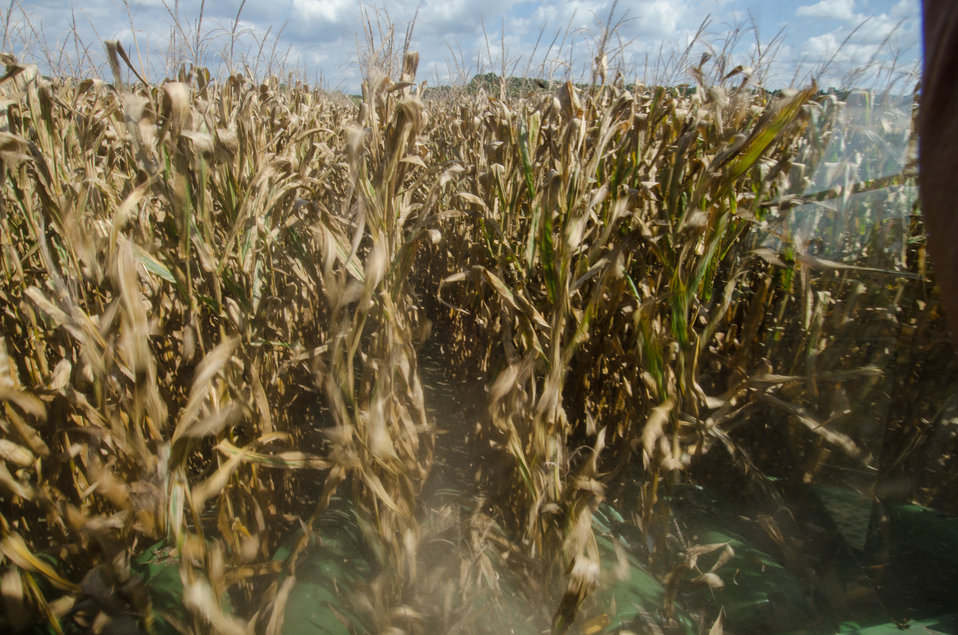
The view from the cab of a corn harvester, driven by John N. Mills, Jr., as he follows a GPS guided course through his fields of feed corn, during the Friday, Sept. 20, 2013, harvest at the John N. Mills & Sons farm; a family owned business located in the Hanover and King William Counties Virginia, on Friday, Sept. 20, 2013. Pleasant Level Farm was the original farm from a Land Grant from King George III of England to Nicholas Mills in 1725. The original acreage has never left the Mills family name and continues to be farmed by the family.
Now the farm covers 5,744 acres that produce corn, wheat, soybeans, barley, hay, timber, and pastures a large herd of beef cattle. They have been using conservation and stewardship practices since the 1960s. Some of the efficient practices include no-till planting and cover crops to reduce soil erosion and prevent the leaching of nutrients into ground water, as well as livestock stream exclusion. The farm has several conservation easements that aids in the preservation and restoration of wetlands and waterways. For information about the U.S. Department of Agriculture (USDA), please go to www.usda.gov.